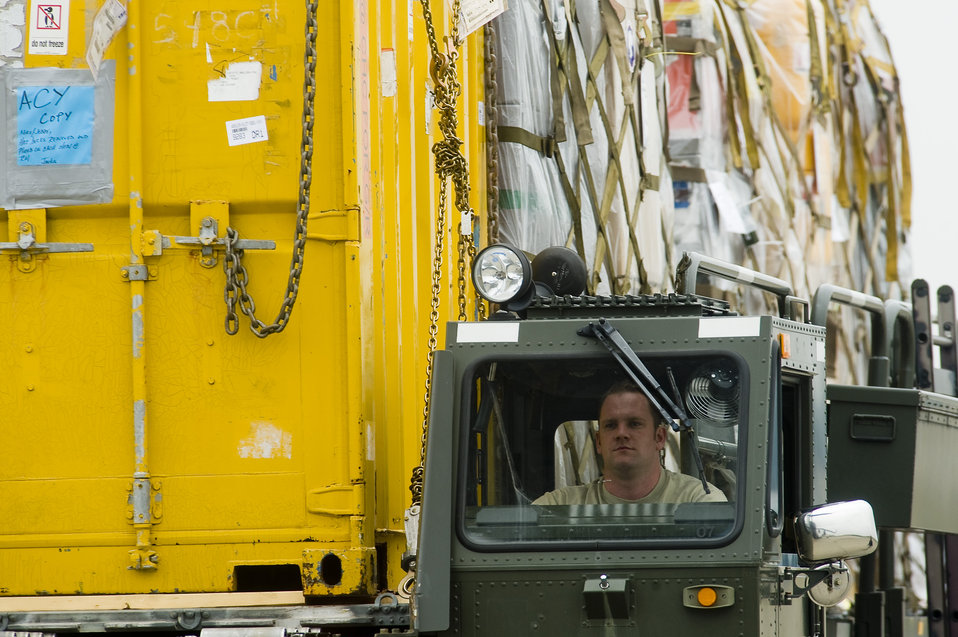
McChord Airmen head for 'the ice' as Operation Deep Freeze season kicks off

Senior Airman Austin Johnson drives a 60K loader with cargo to be secured on board a C-17 Globemaster III Sept. 24, 2009, at McChord Air Forace Base, Wash. This was preparation prior to the C-17 departing for a mission in support of Operation Deep Freeze to Antarctica. Airman Johnson is assigned to the 62nd Aerial Port Squadron.